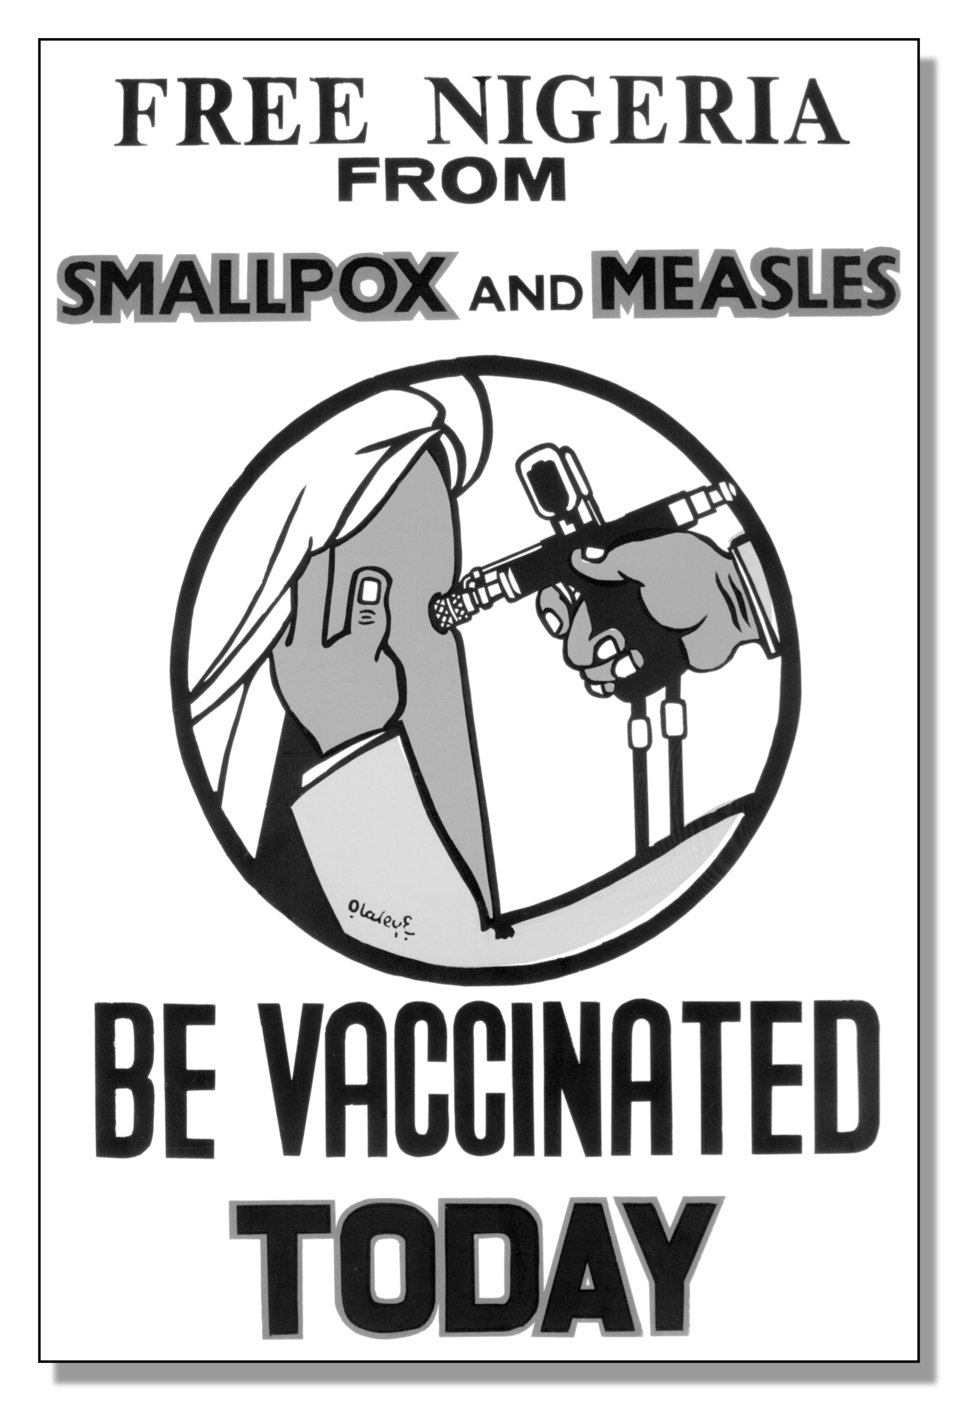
This was an early pre-1979 poster from Nigeria promoting vaccination for Smallpox and Measles.